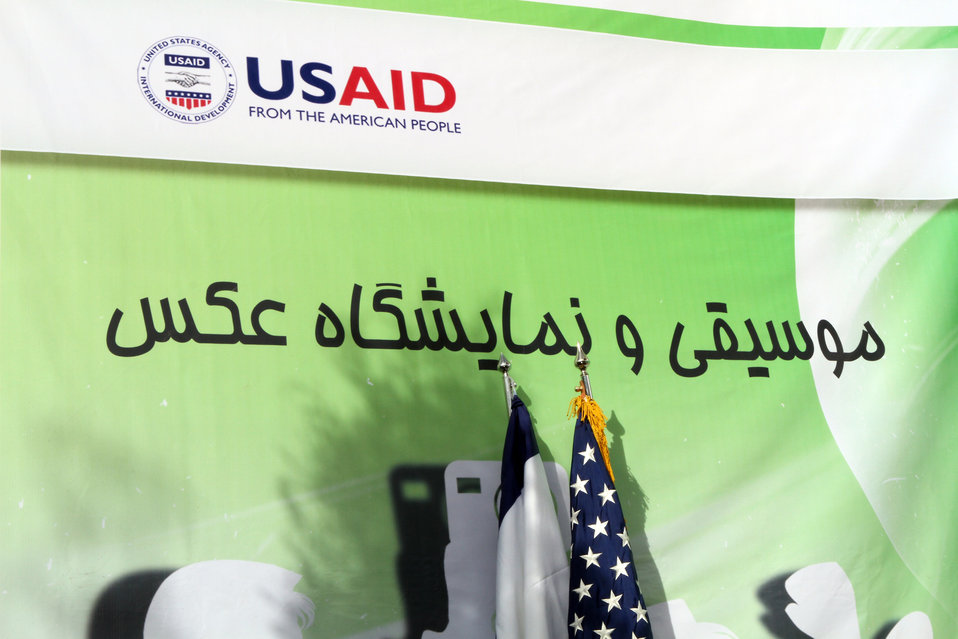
Afghan Youth Festival

Internews - USAID